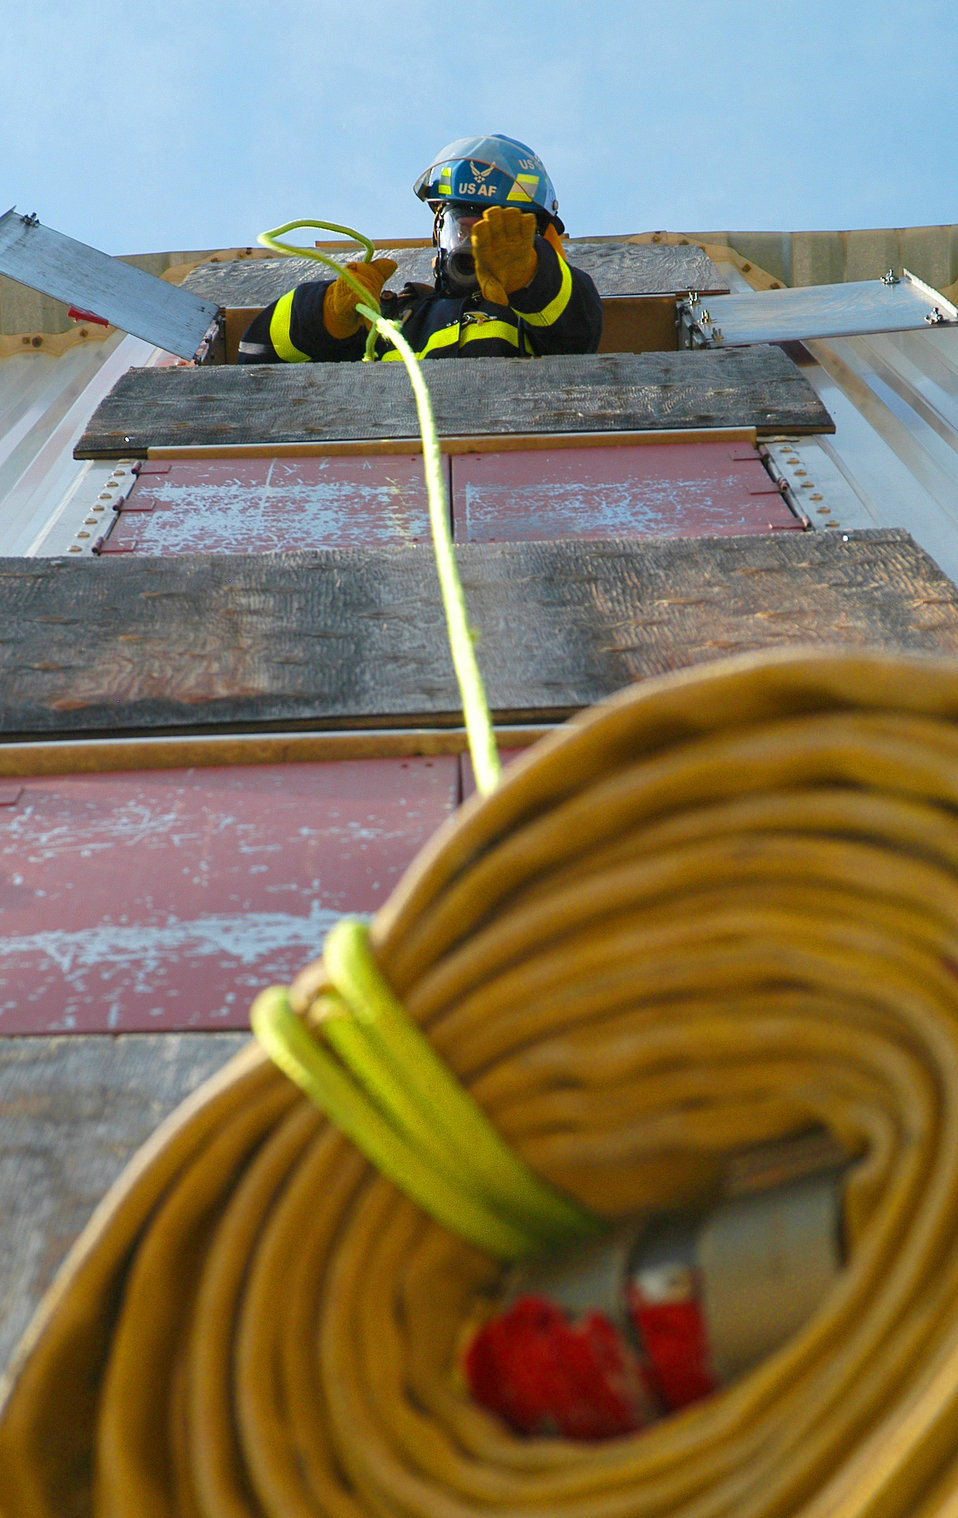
Going up

U.S. AIR FORCE ACADEMY, Colo. -- Airman 1st Class Chad Homberg gets into a rhythm as he hauls a 45-pound firehose up four stories in less than 10 seconds. Homberg returned from Operation Iraqi Freedom two months ago and is hard at work training for the upcoming Firefighter Combat Challenge.